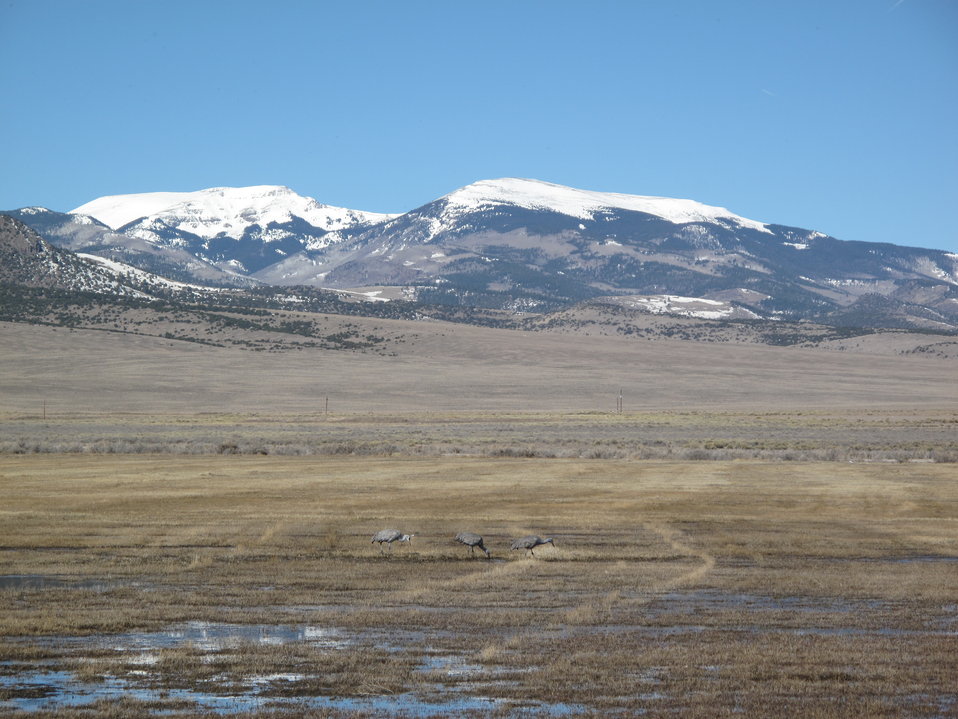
Cranes Feeding at Monte Vista National Wildlife Refuge

The Monte Vista National Wildlife Refuge serves as a stopover point for cranes during their northward and southward migrations each year. The birds using the Refuge nest primarily in Montana, Idaho and Wyoming and spend winters in New Mexico, Arizona, and Mexico. However, some cranes that visit the Refuge may nest as far away as Alaska and western Siberia.